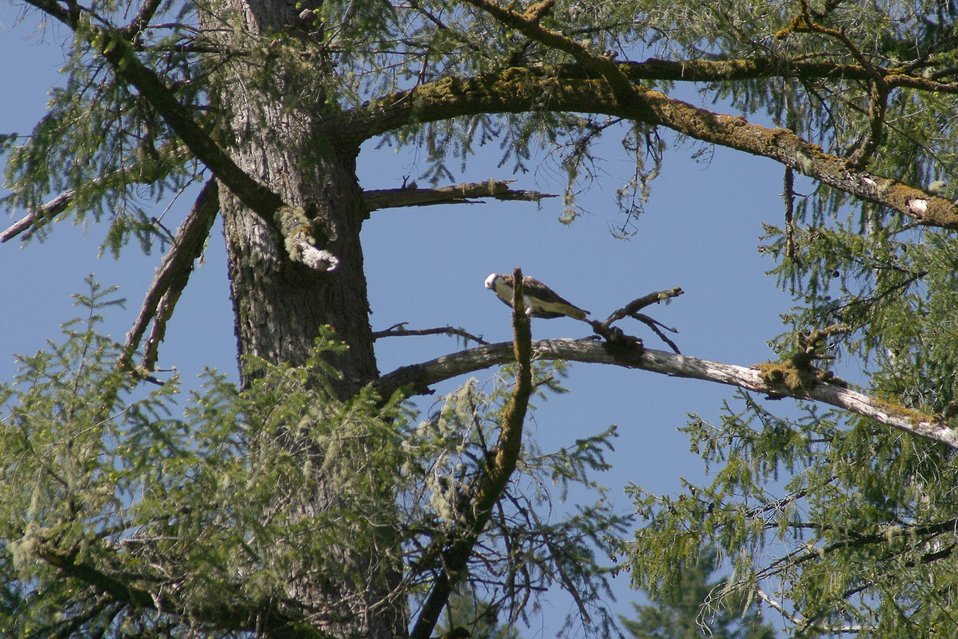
Wild section of the Rogue River from Grave Creek to Foster Bar May 19 to May 22.